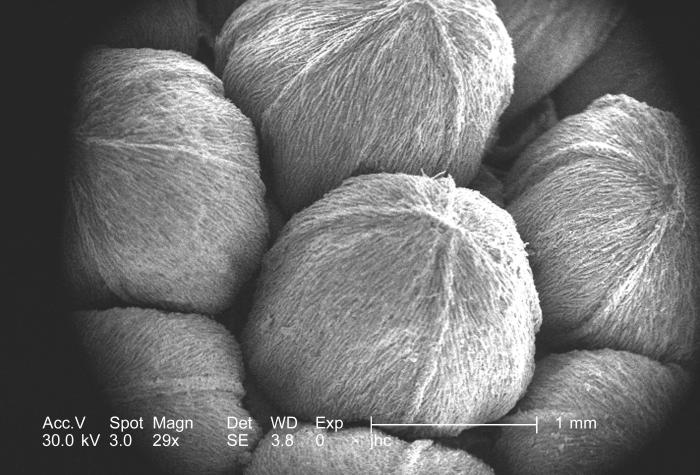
This 2006 scanning electron micrograph (SEM) highlighted the morphologic features depicted by the central green colored cluster of unerupted flower buds of a dogwood blossom, Cornus florida. Upon initial inspection, people will mistake the "bracts", or modified protective leaves, which encase this cluster, for the flower's petals. However, the actual florwer petals are extremely small and delicate, and will erupt from these clustered rounded buds.